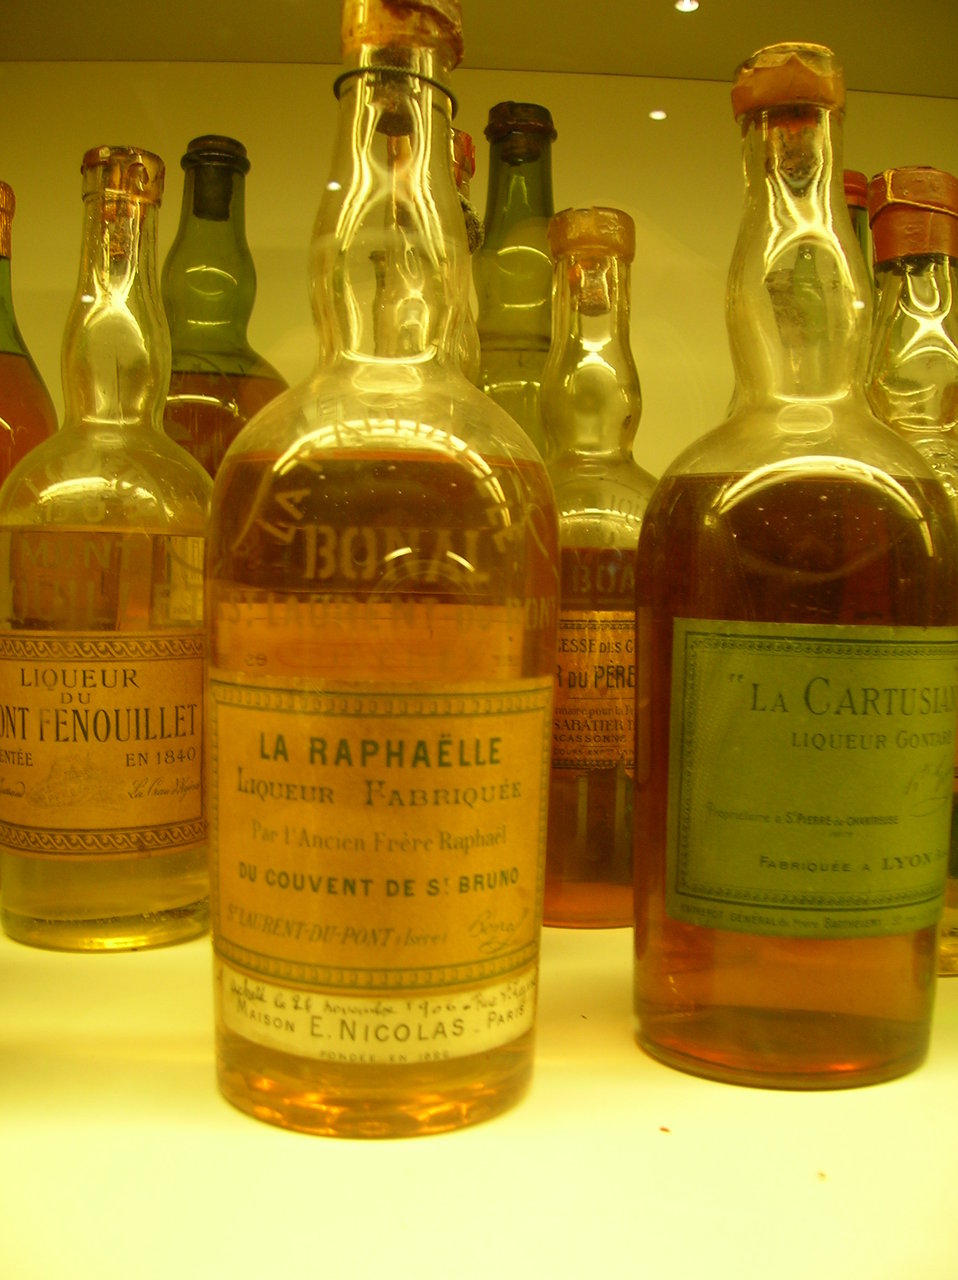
Counterfeits of Chartreuse liquors. Fran√ßais†: Contrefa√ßons de liqueur de Chartreuse.